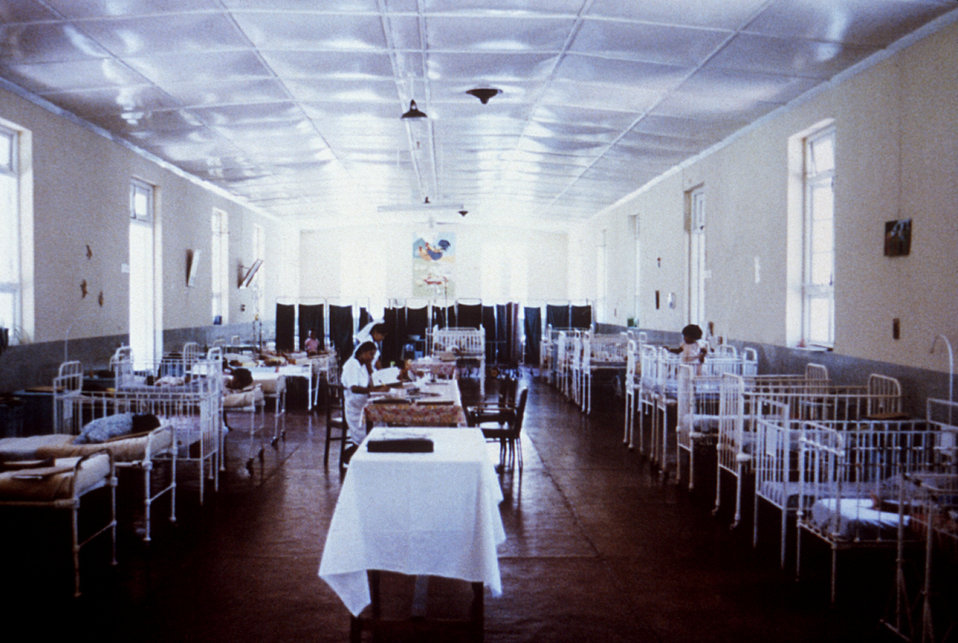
This 1980 photograph depicts the children's ward of the Port Louis, Mauritius Civil Hospital where typhoid patients were housed.